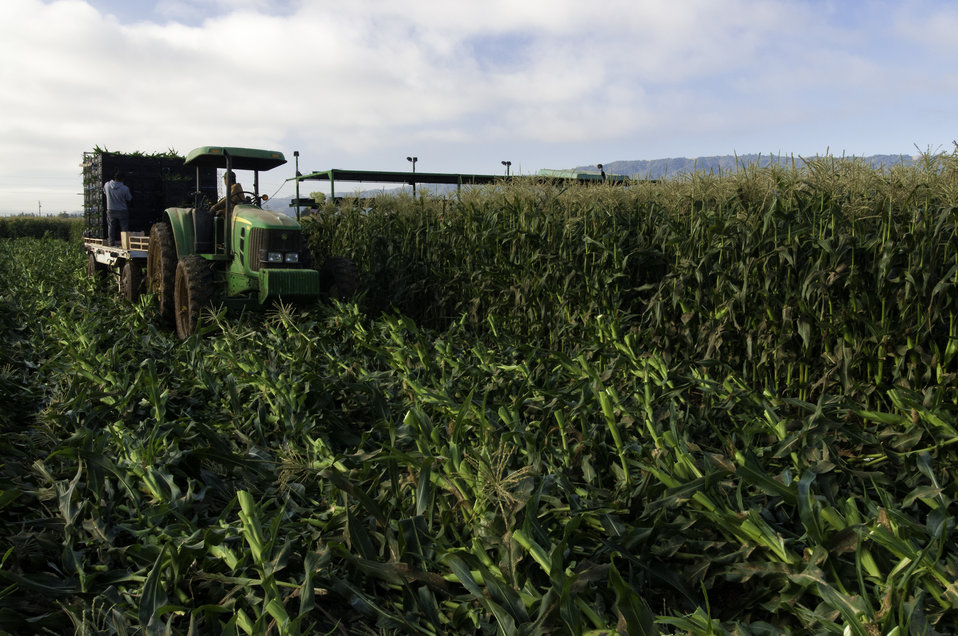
Corn is harvested on Uesugi Farms in Gilroy, CA on Wednesday, Aug. 28, 2013.